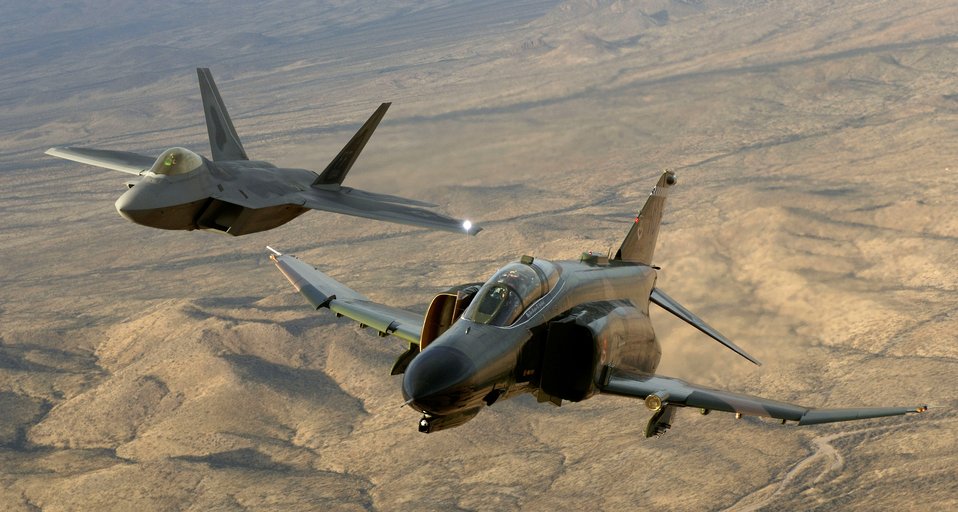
Heritage flight

Lt. Col. Charles Hainline, an F-4 Phantom pilot from Holloman Air Force Base, N.M., and Lt. Col. Michael Shower, an F-22A Raptor pilot from Langley Air Force Base, Va., fly in formation over Tucson, Ariz., during the Air Combat Command Heritage Conference at Davis-Monthan Air Force Base Sunday, March 5, 2006.